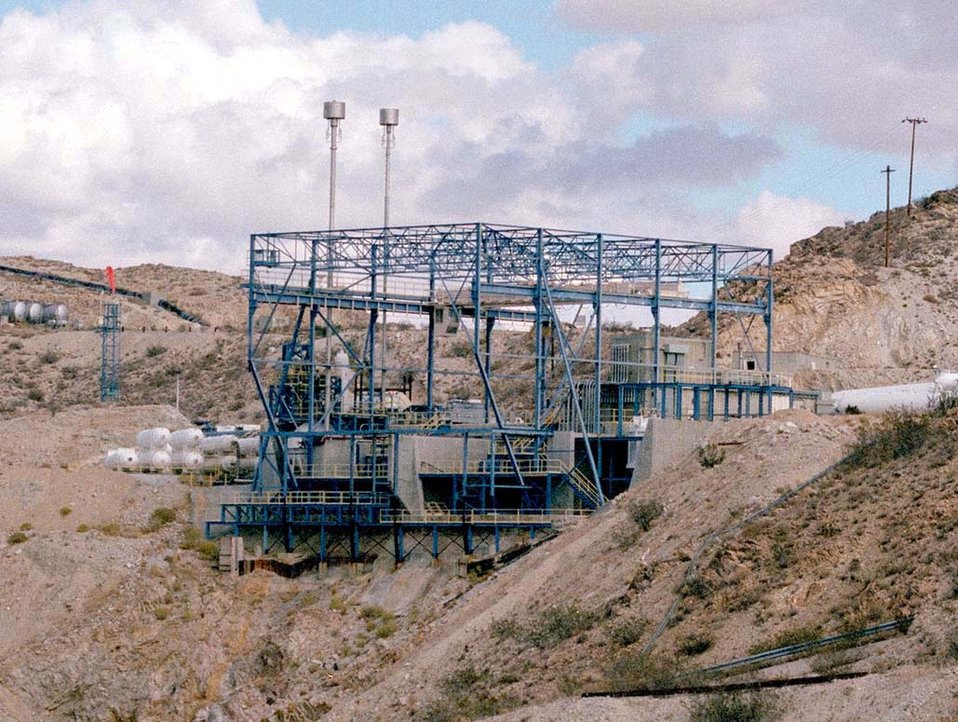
Stand gets facelift

EDWARDS AIR FORCE BASE, Calif. -- Rocket Test Stand 2-A is the only Department of Defense stand capable of performing full-scale rocket thrust chamber development testing in the 750,000-pounds-of-thrust class. This test stand recently underwent an $18.5-million facelift.